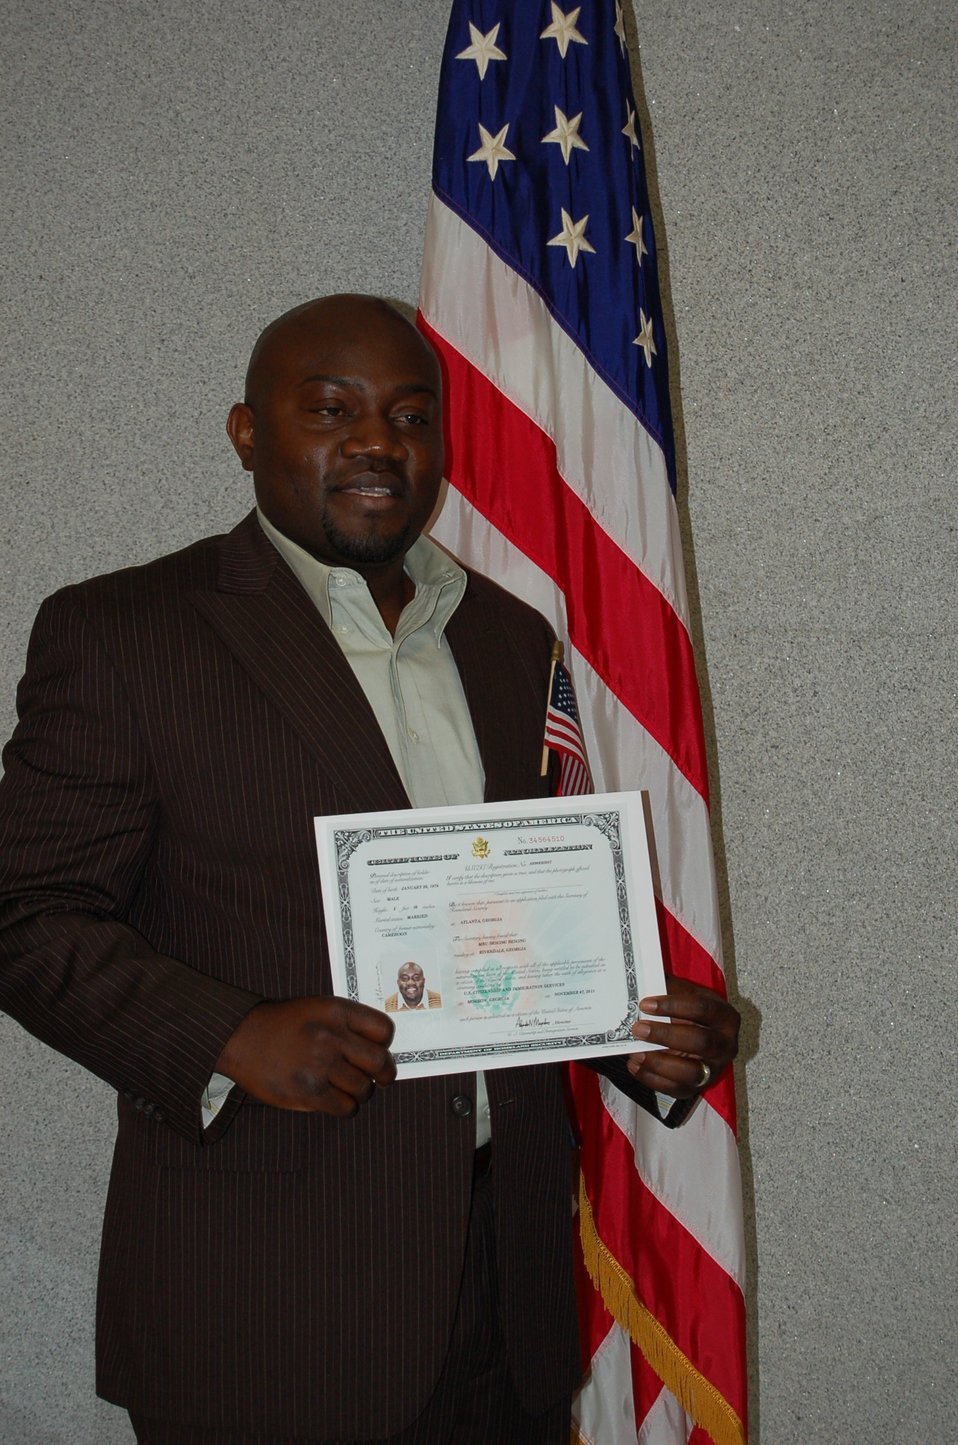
New Citizens